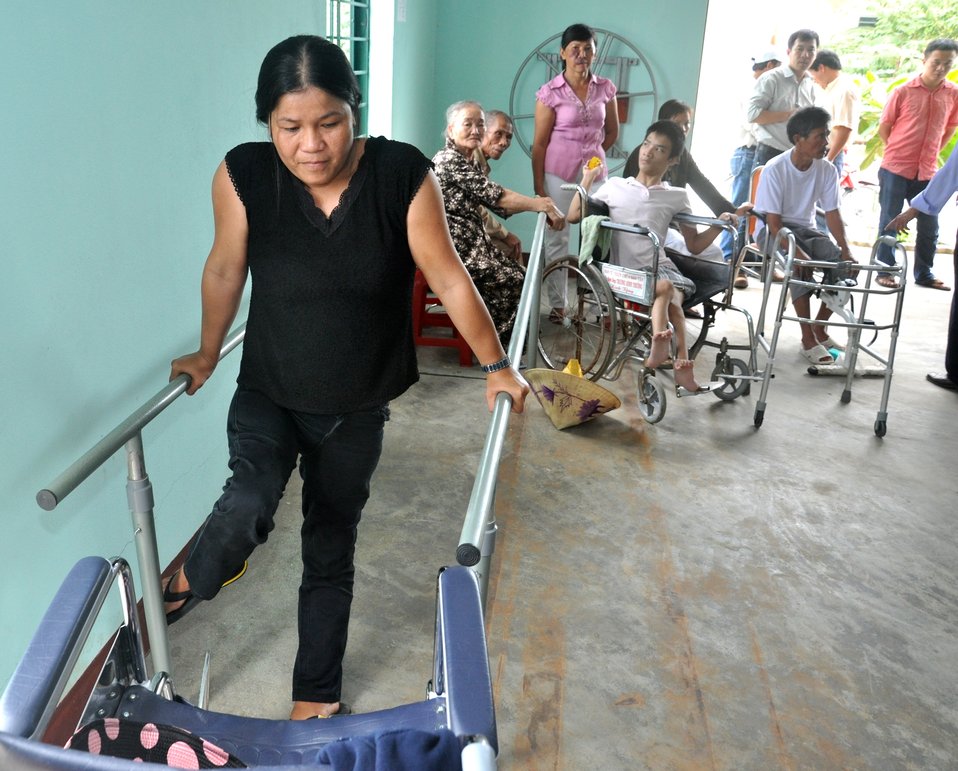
USAID supports a community rehabilitation unit in Danang.

Danang, June 10, 2013.